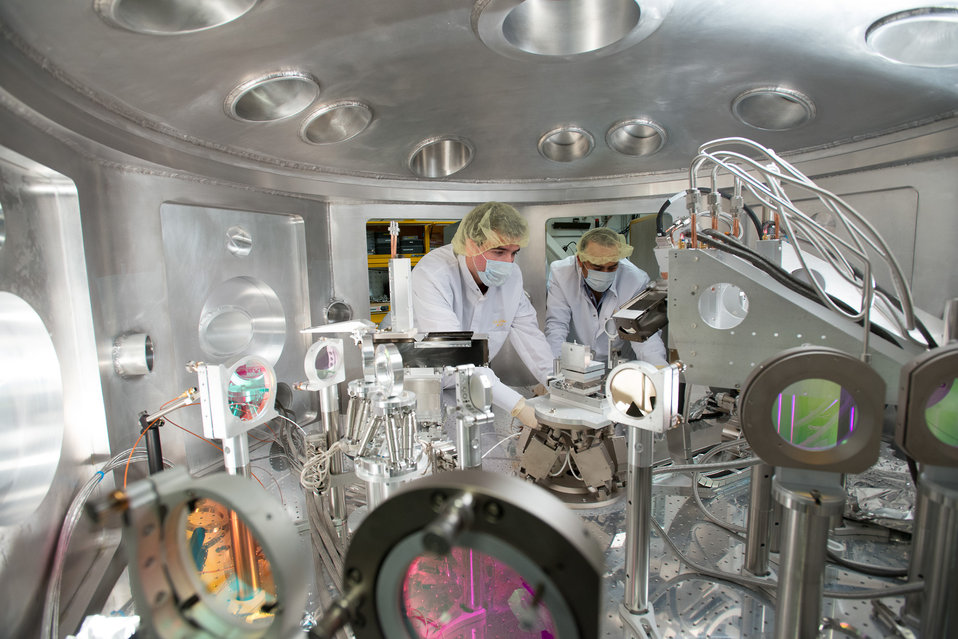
Shown is the Matter in Extreme Conditions (MEC) hutch of SLAC's LCLS Far Experiment Hall.

The (MEC) Matter in Extreme Conditions instrument at SLAC gives scientists the tools to investigate the extremely hot, dense matter at the centers of stars and giant planets. These experiments could help researchers design new materials with enhanced properties and recreate the nuclear fusion process that powers the sun.